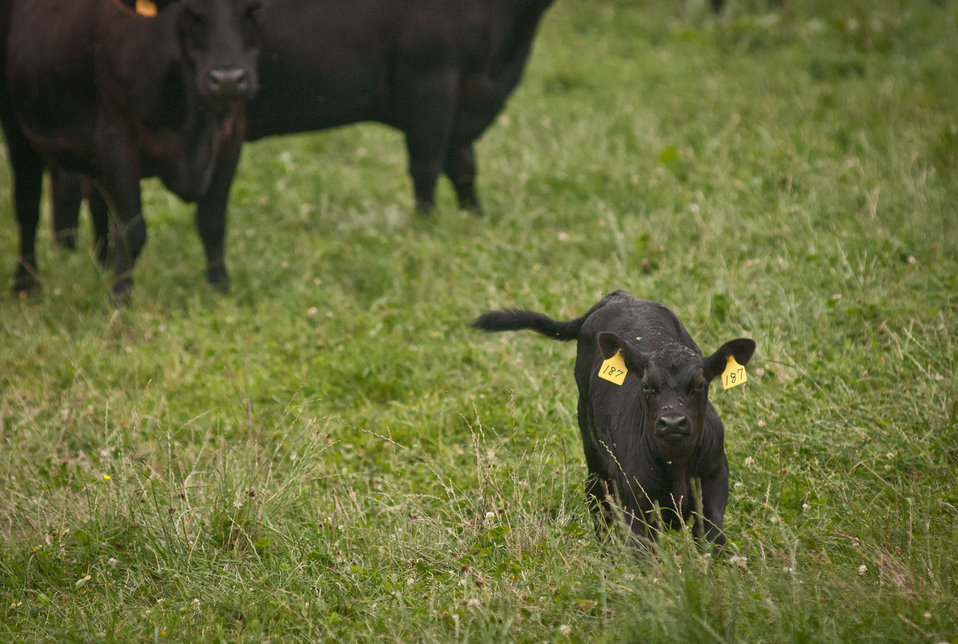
Black Angus cows and calves graze organic pastures, and for added nutrition and variety, they enjoy a daily feeding of sweet silage at Nick’s Organic Farm, owned by Nick Maravell, in Adamstown, MD on Friday, July 12, 2013. The white plastic wrapped bales of pasture grass and alfalfa have been fermenting for months to create sweet silage that stores well and can be used to feed cattle at varying amount all year long. The fermentation process sweetens the taste and increases the vitamin levels. The farm produces Black Angus beef, chicken, turkey, eggs, hay, soybeans, corn, alfalfa, orchard grass, rye; and other crops. The cattle are 100% grass-fed receiving certified organic pasture, certified organic hay (in winter), water and mineral salts mixed with sea kelp. The cattle are not fed hormones, antibiotics or animal products. Poultry feed from grain is ground from organic grain. The poultry also graze on organic pastures. The farm has conducted on-farm research with federal, state and non-profit agencies to refine organic practices. An organization such as the U.S. Department of Agriculture (USDA) Agricultural Research Service (ARS) center in Beltsville has been able to conduct research to improve organic crops and to breed and manage the cattle so that they have.